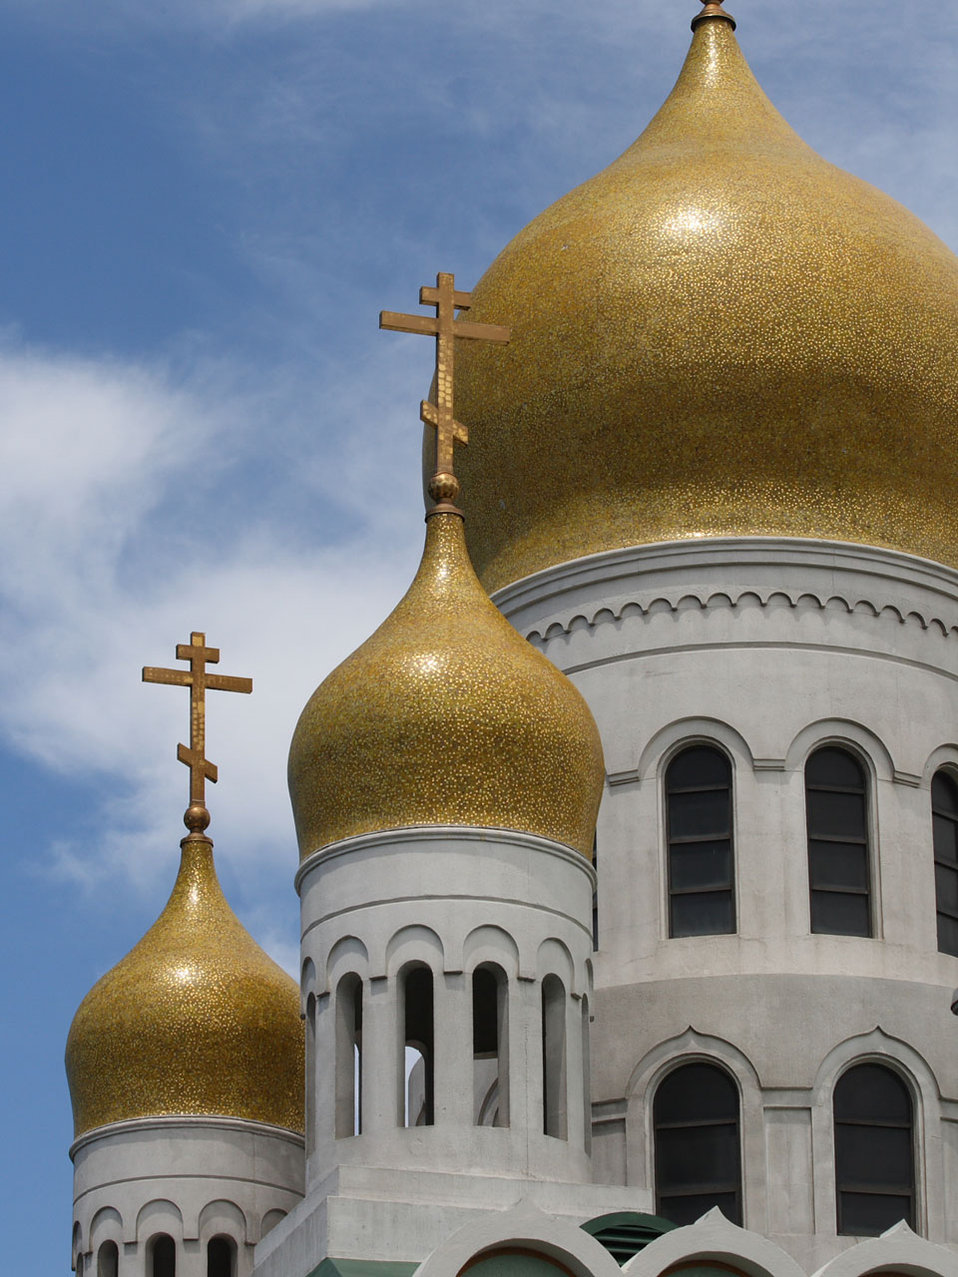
Russian cathedral domes

"onion" domes of the russian holy virgin cathedral of the church in exile in san francisco, ca.